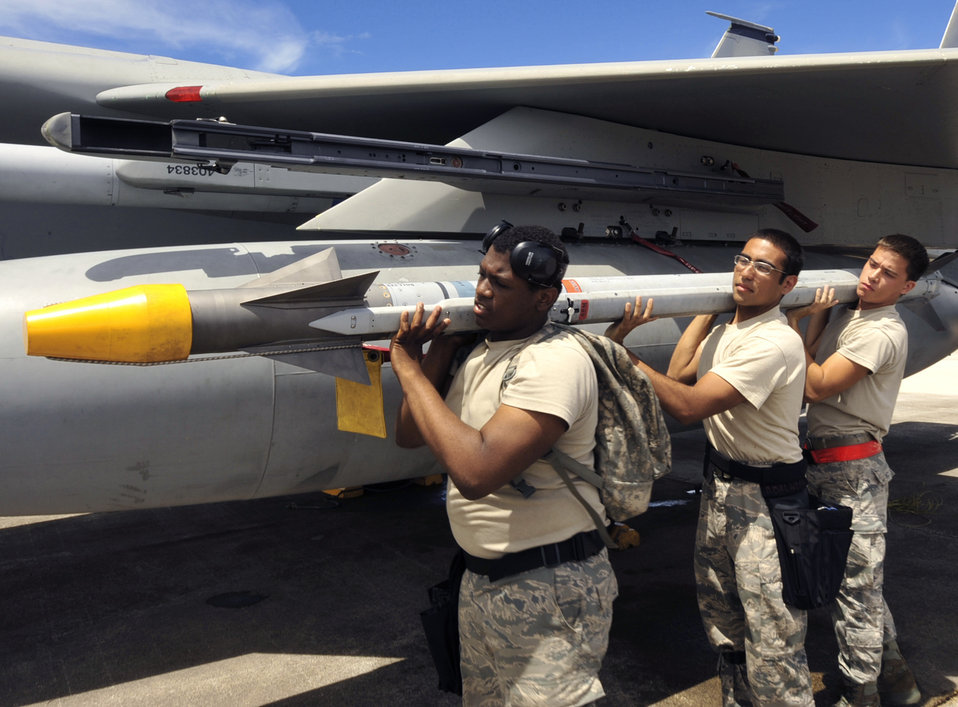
Teamwork works

Weapons armament specialists Airman First Class De'Marcus Kirby and Senior Airmen Emad Hamedeyyeh and Charles Cerdena unload an AIM-9X from an F-15 Eagle Sept. 15, 2010, during an exercise at Andersen Air Base, Guam. The Airmen are with the 67th Aircraft Maintenance Squadron.